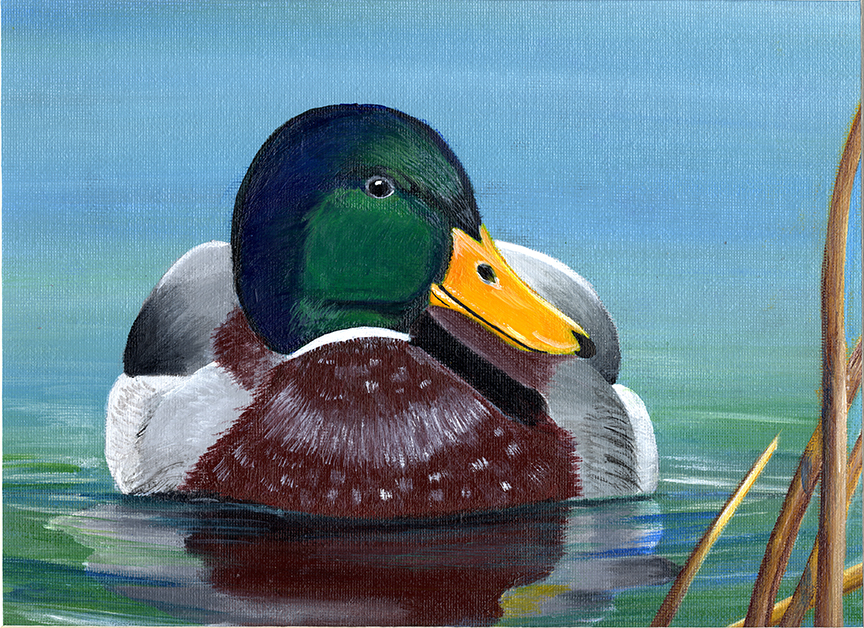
JRDuck2013MS

2013 Junior Duck Stamp Best of Show-Mississippi